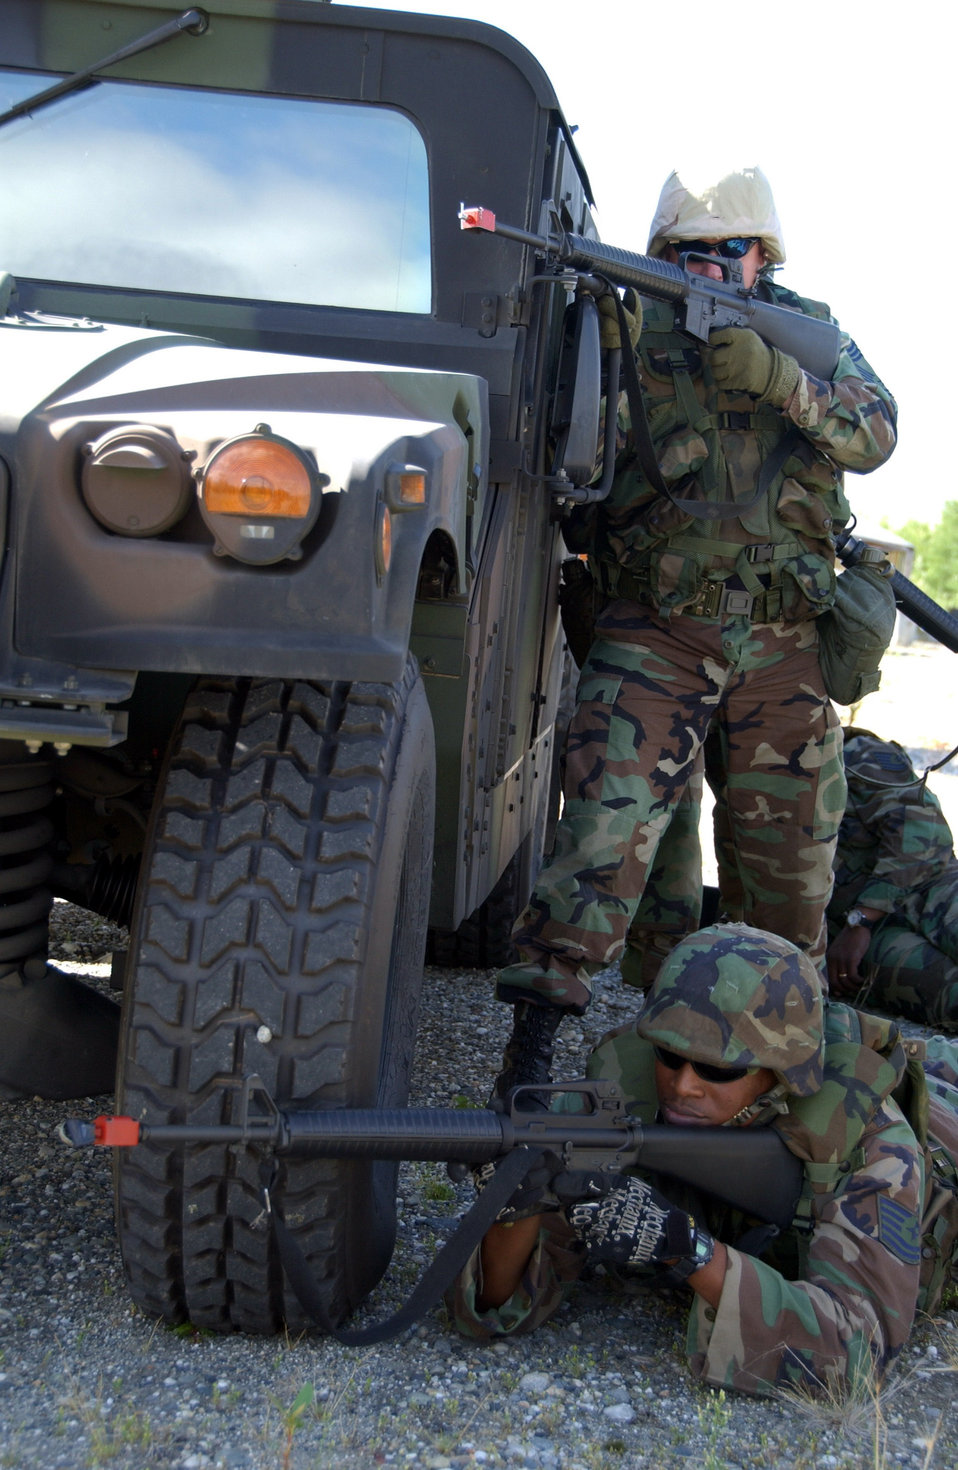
Air warriors train for deployment

Chief Master Sgt. Matthew Marshall (standing) and Tech. Sgt. James Armstrong demonstrate where to position themselves after exiting a Humvee while taking